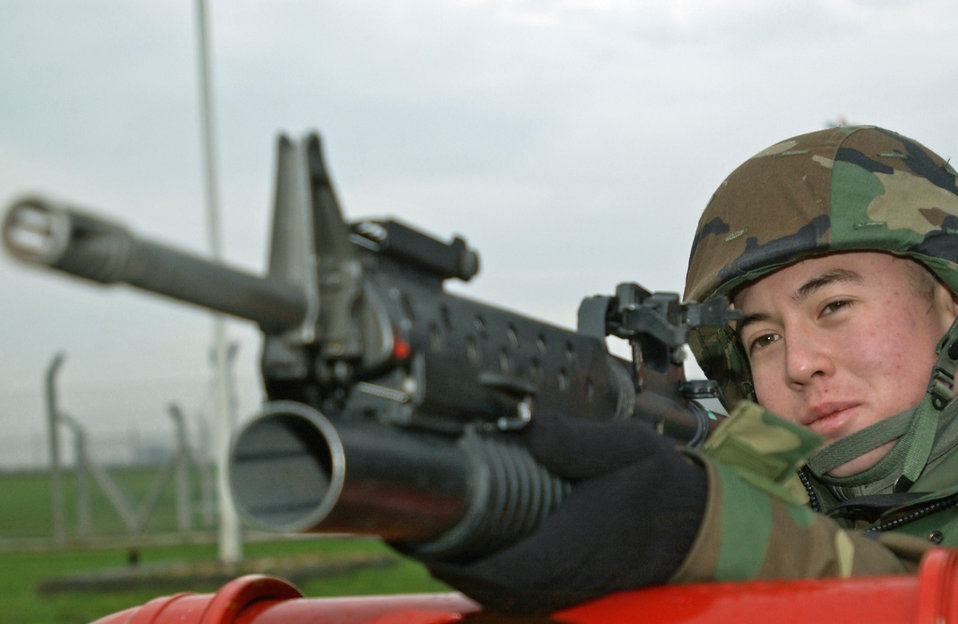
Take aim

ROYAL AIR FORCE LAKENHEATH, England -- Airman 1st Class Frank Irvin aims a grenade launcher at a practice target here recently. Airman Irvin is assigned to the 48th Security Forces Squadron.